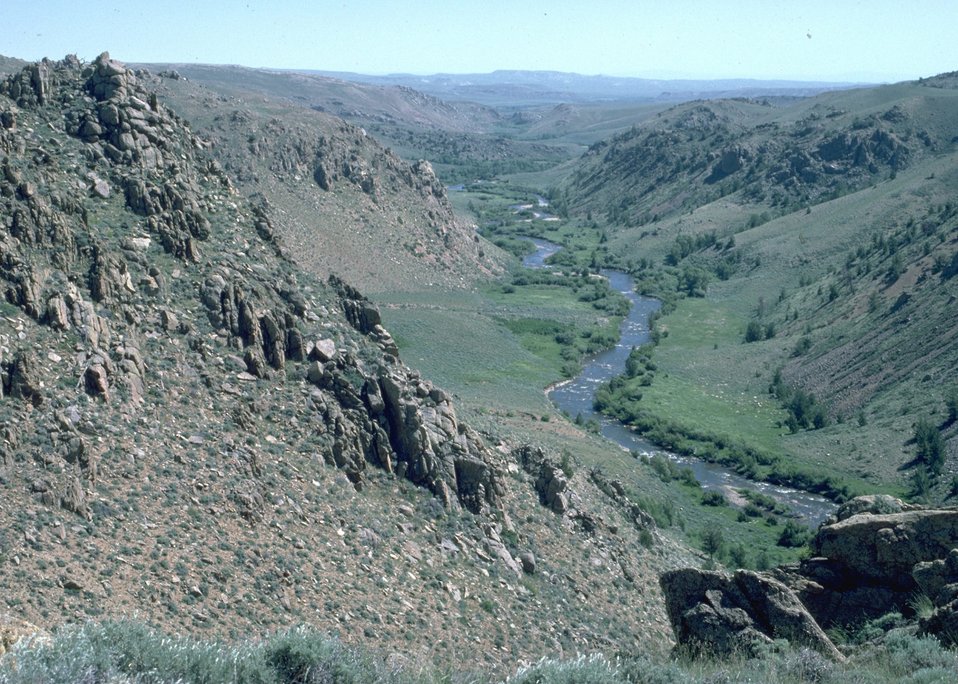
A hill top view of a river